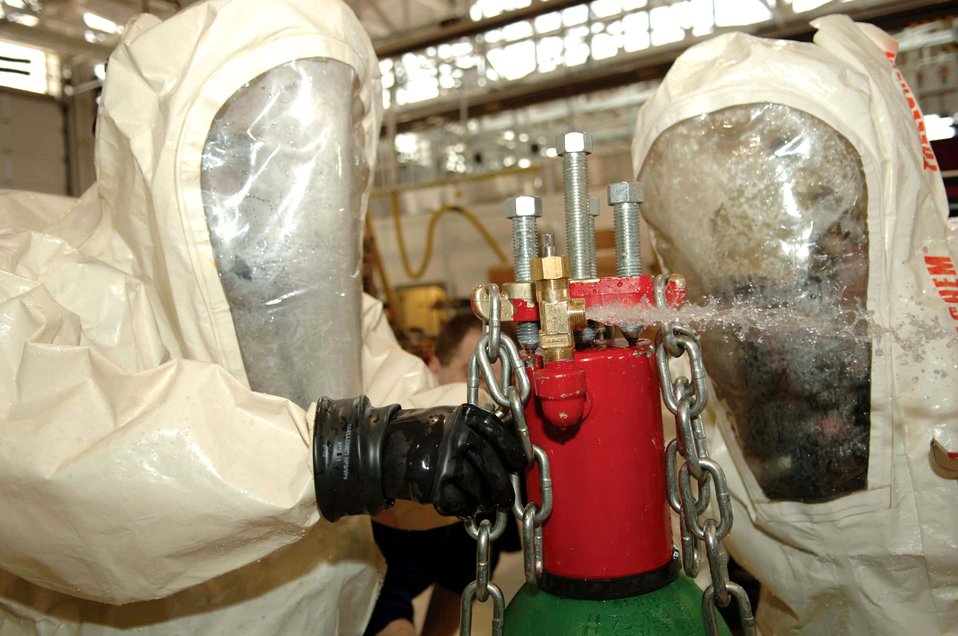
Hazardous materiel training

Airman 1st Class Seth Maher (left) and Tech. Sgt. Michael Hall, both 5th Civil Engineering Squadron firefighters, participate in a hazardous material training exercise at Minot Air Force Base Tuesday, March 14, 2006. Airman Maher and Sergeant Hall simulated stopping a chlorine leak on different equipment.